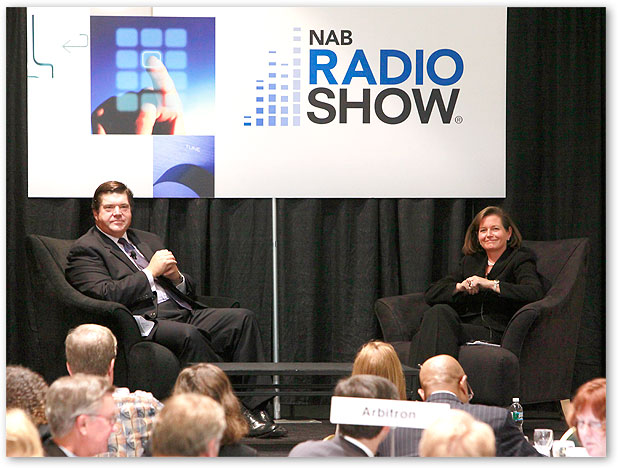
with-newberry